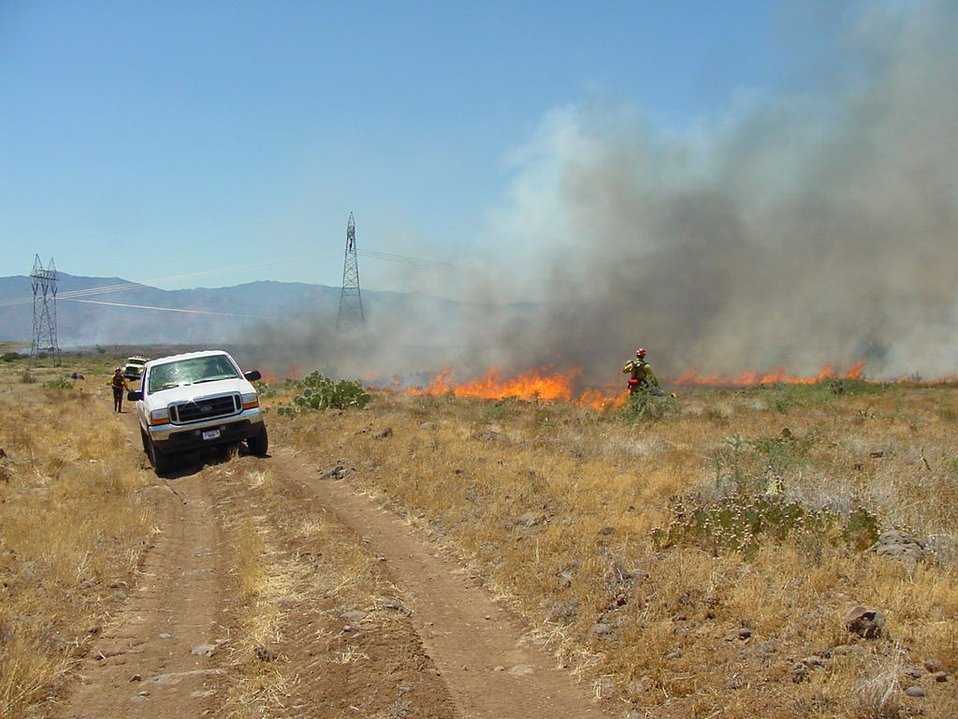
Prescribed burn at Richinbar on Agua Fria National Monument.